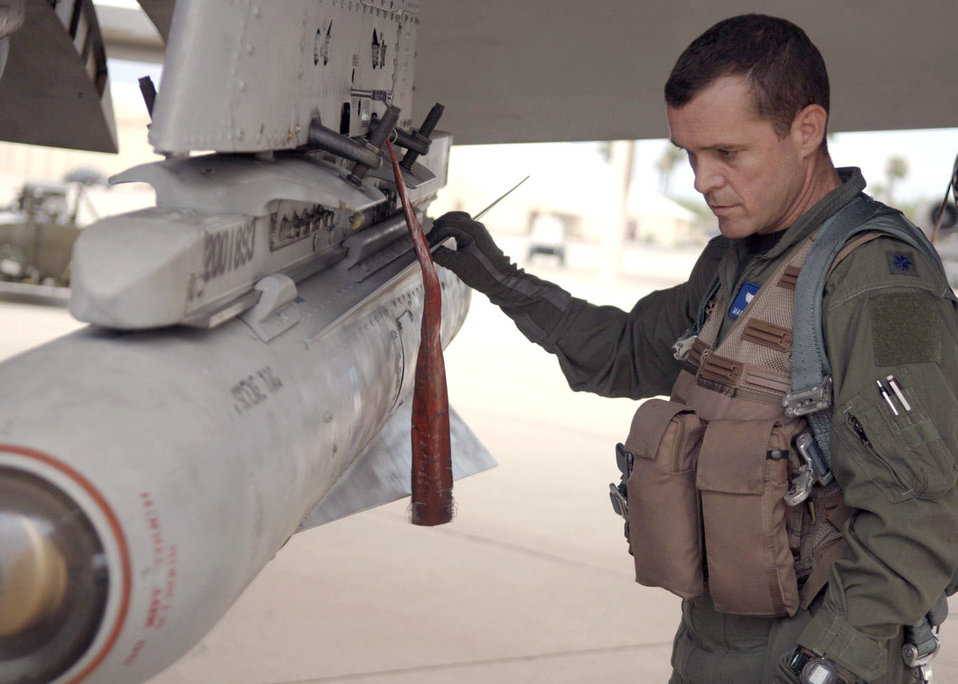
Pre-flight

Lt. Col. Francis McDonough performs pre-flight inspections on an A-10 Thunderbolt II as he prepares for a sortie at Davis-Monthan Air Force Base, Ariz., on July 7. Colonel McDonough is assigned to the 355th Wing.